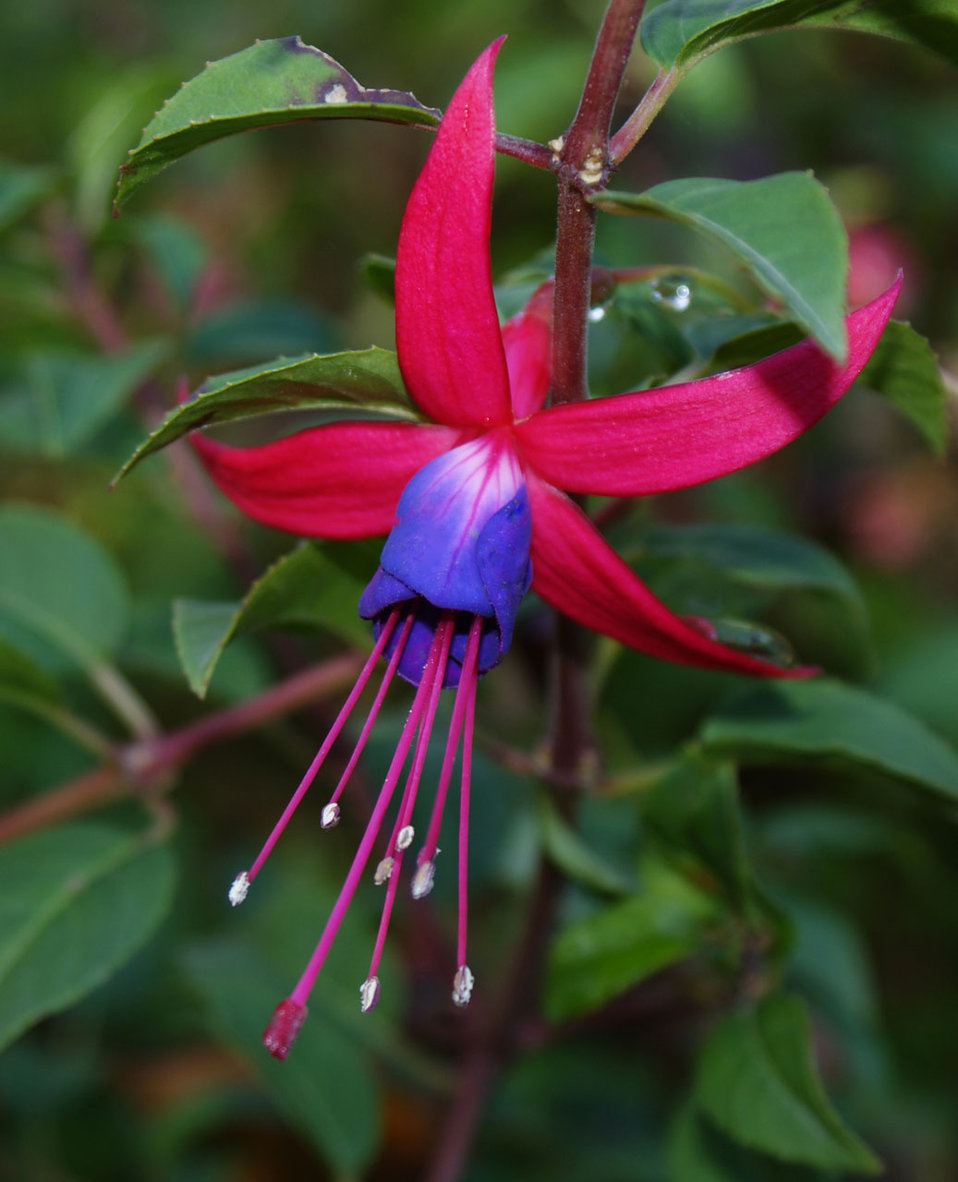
Fuchsia

Fuschia flower at point defiance..